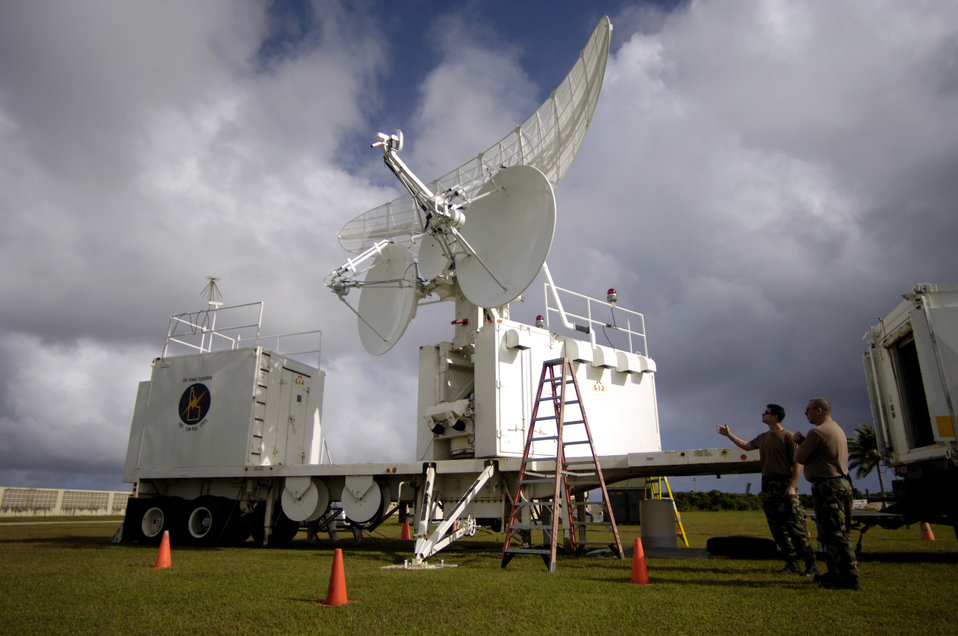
Radar inspection

ANDERSEN AIR FORCE BASE, Guam (AFPN) -- Tech. Sgt. John Cumbridge and Staff Sgt. Philip Neussendurfer inspect a radar site here. The site provides electronic threats such as anti-aircraft artillery, surface-to-air-missiles and airborne interceptors for aircraft training. Sergeants Cumbridge and Neussendurfer are radar technicians from the Idaho Air National Guard's 266th Range Squadron.